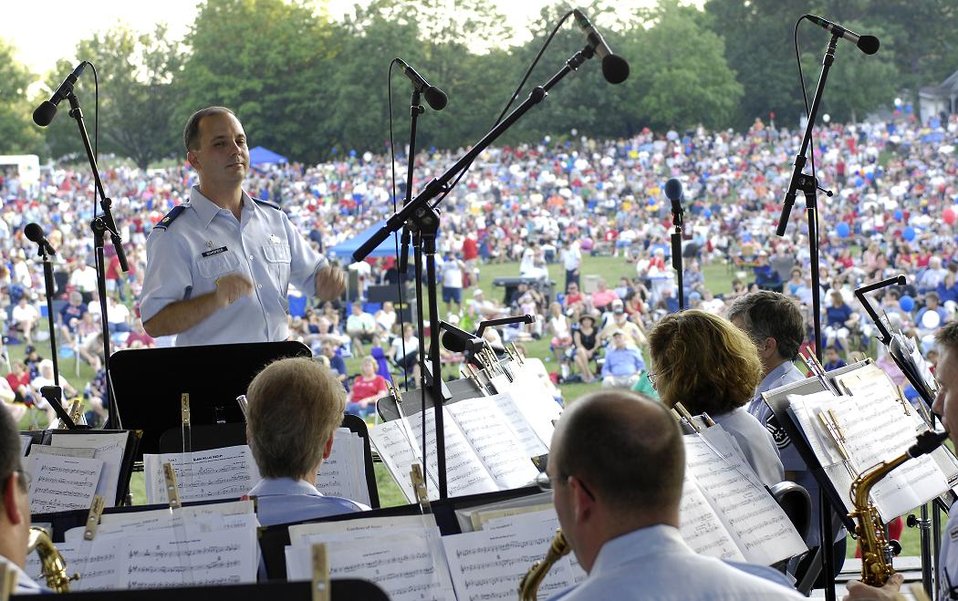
Air Force Week St. Louis

Commander and Conductor, Maj. Don Schofield, leads the U.S. Air Force Band of Mid-America as the perform at the Jefferson Barracks Blast, July 3, 2007. St. Louis County, in partnership with the Air Force during Air Force Week, put on the blast, entertaining the more than 20,000 in attendance.